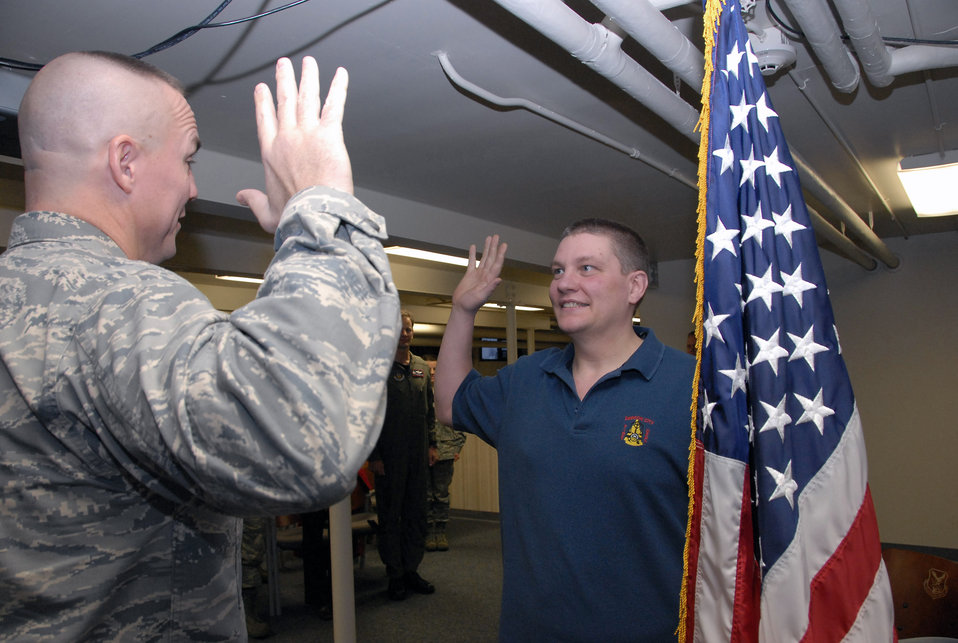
Airman sheds 115 pounds to work on F-22s in Alaska

Derrick Bell enlists in the Air Force Reserve Jan. 15 at Elmendorf Air Force Base, Alaska. Airman Bell is the newest enlisted member of the 477th Fighter Group, a Reserve unit responsible for recruiting, training, developing and retaining Citizen Airmen. In only 11 months, Airman Bell lost 115 pounds to meet physical standards for the Air Force Reserve. Today he is preparing to attend technical training to work as an F-22 Raptor crew chief.